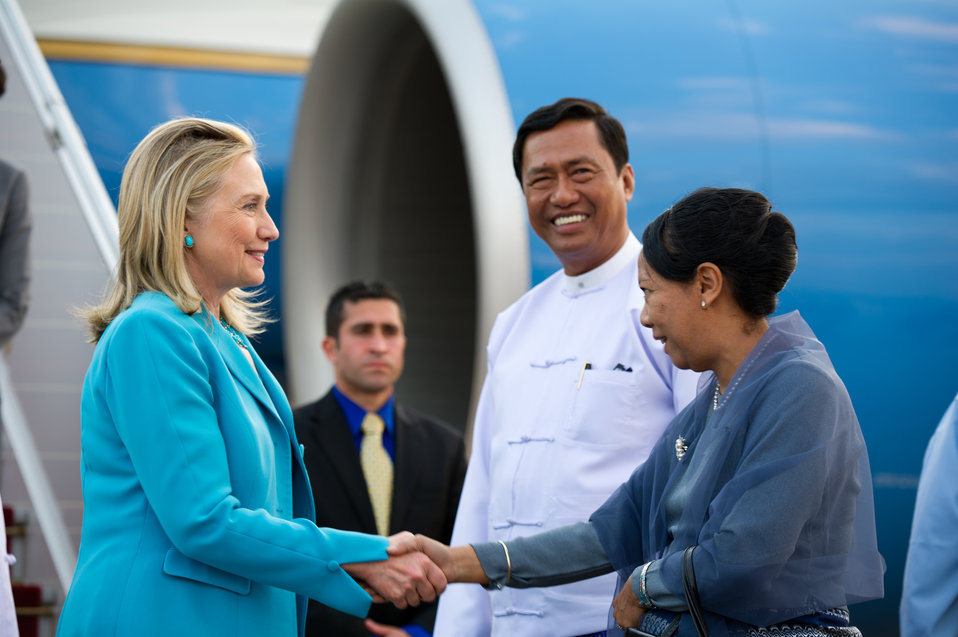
Secretary Clinton Arrives in Rangoon

U.S. Secretary of State Hillary Rodham Clinton arrives in Rangoon from Nay Pyi Taw to continue her historic visit to Burma on December 1, 2011.